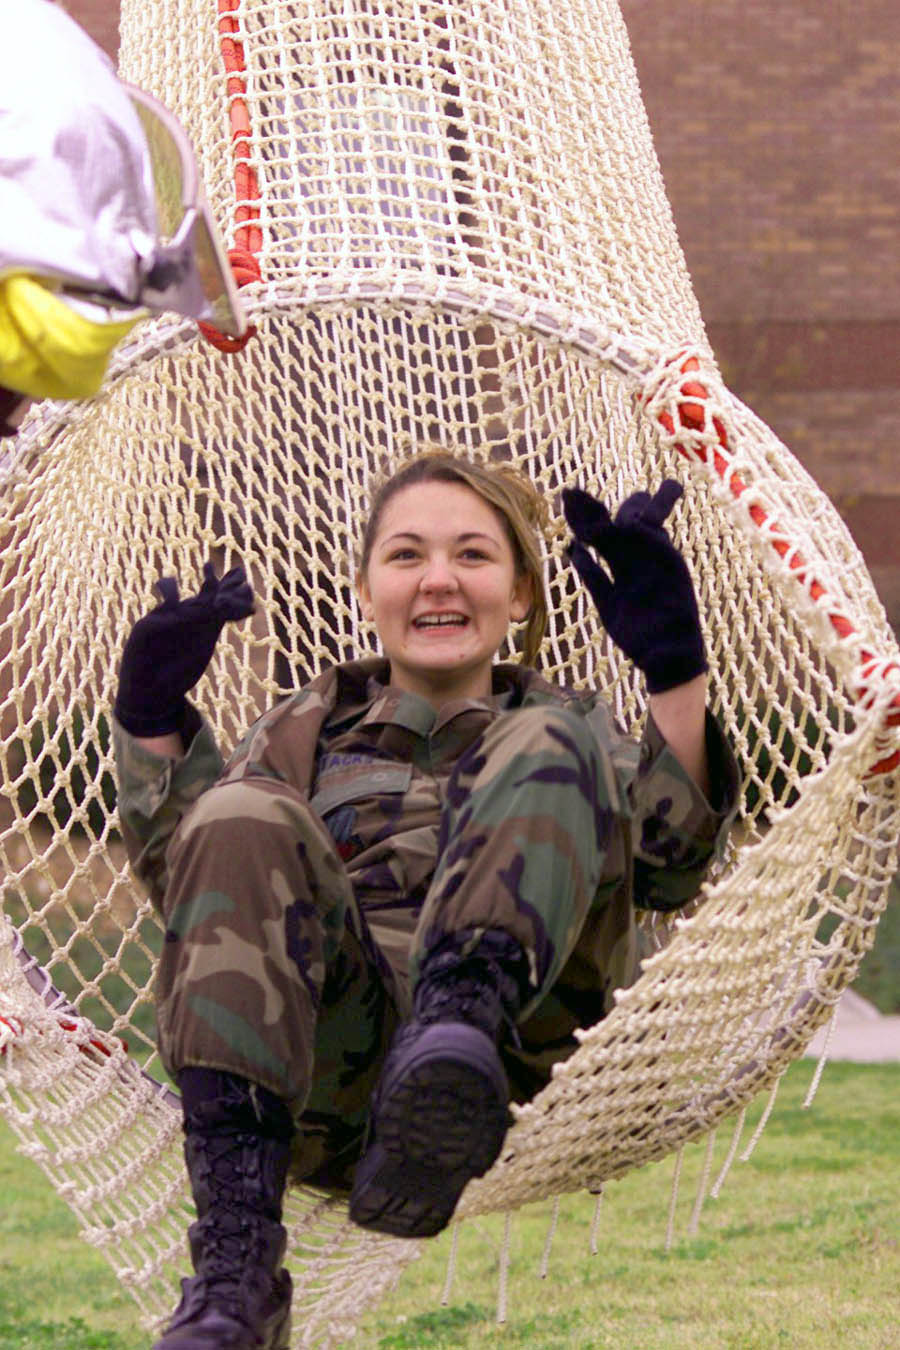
Slide for life

WHITEMAN AIR FORCE BASE, Mo. -- Airman 1st Class Jessica Stacks exits the bottom of a Baker Life Chute during a control-tower evacuation exercise here. About 40 people participated in the exercise. The 116-foot chute can be used for evacuations during emergencies like fires and bomb threats. Stacks is an air traffic controller with the 509th Operations Support Squadron.